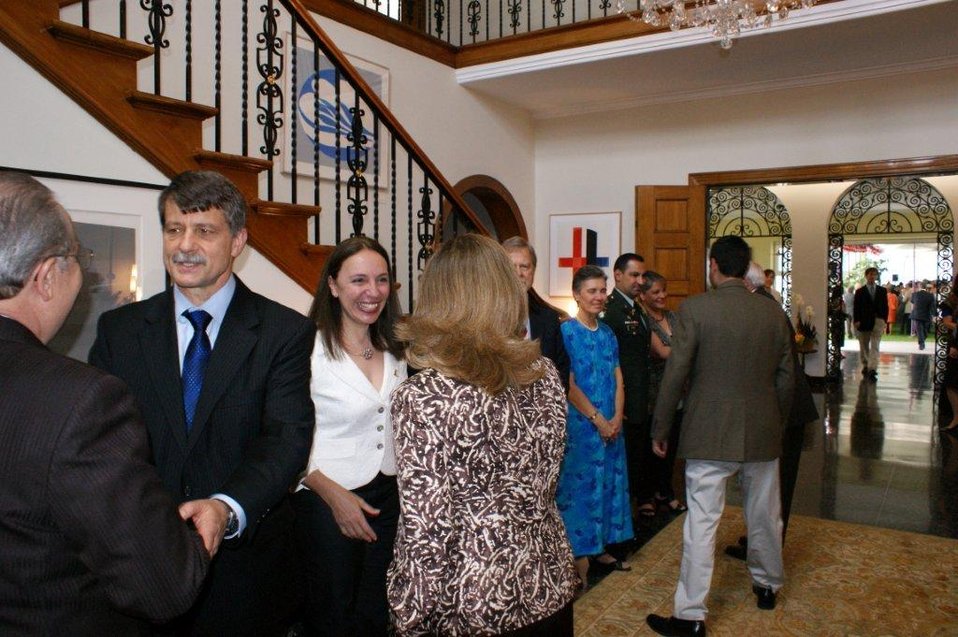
July 4th Celebration at U.S. Embassy in Guatemala

Guests arrive for the U.S. Independence Day celebration at the Ambassador's Residence for the U.S. Independence Day celebration in Guatemala City, Guatemala, on July 2, 2010.